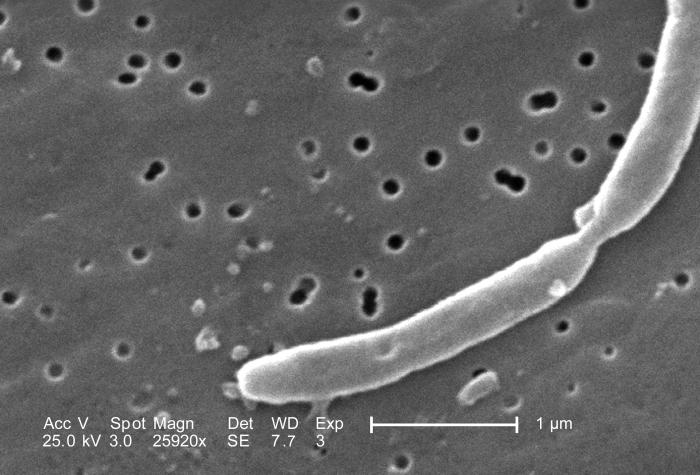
At a very high magnification of 25,920X, twice that of PHIL 10570 and 10571, this scanning electron micrograph (SEM) revealed some of the morphologic details displayed by a two joined Gram-negative Escherichia coli bacteria. These bacteria were members of the strain, 0:169 H41 ETEC (Enterotoxigenic E. coli).Enterotoxigenic E. coli, a common cause of bacterial diarrhea...